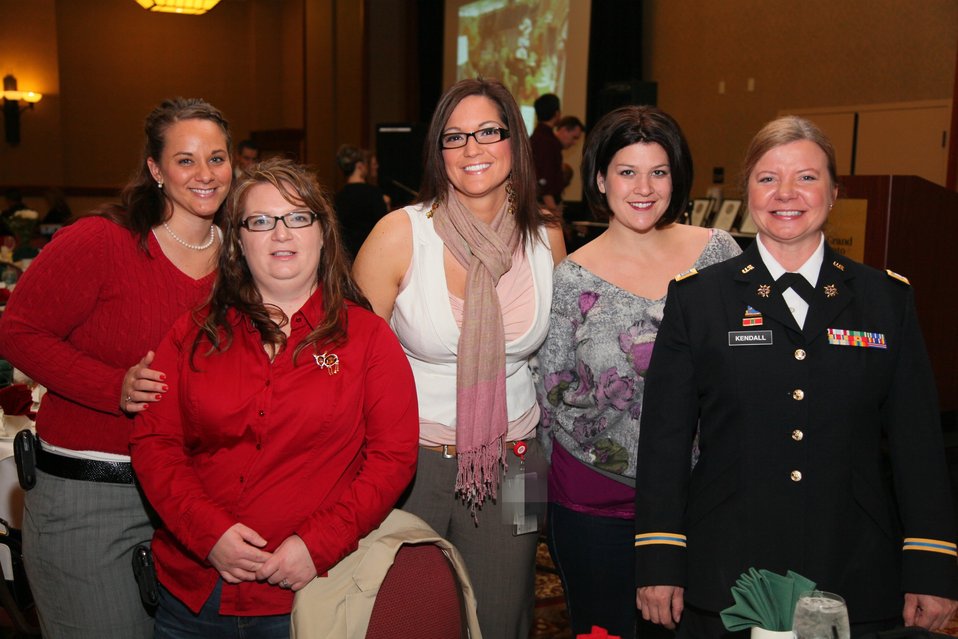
Sacramento District Holiday Party 2011